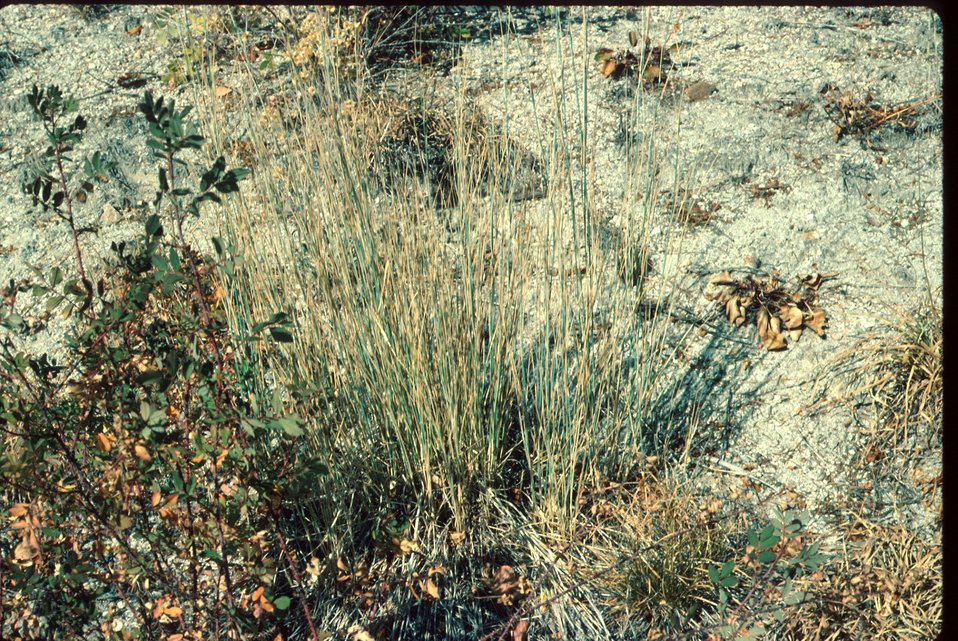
Agropyron spicatum Blue bunch wheatgrass